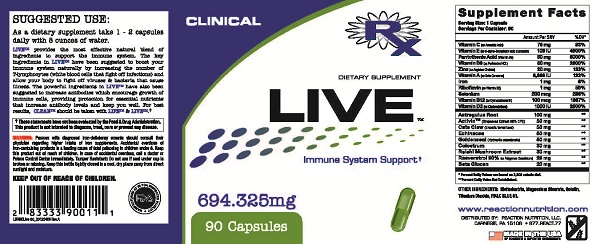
RECALLED - REACTION NUTRITION, LLC

August 23, 2013 – Product Recall – REACTION NUTRITION, LLC issues allergy alert on undeclared milk in LIVE CLINICAL 90 CAPS.